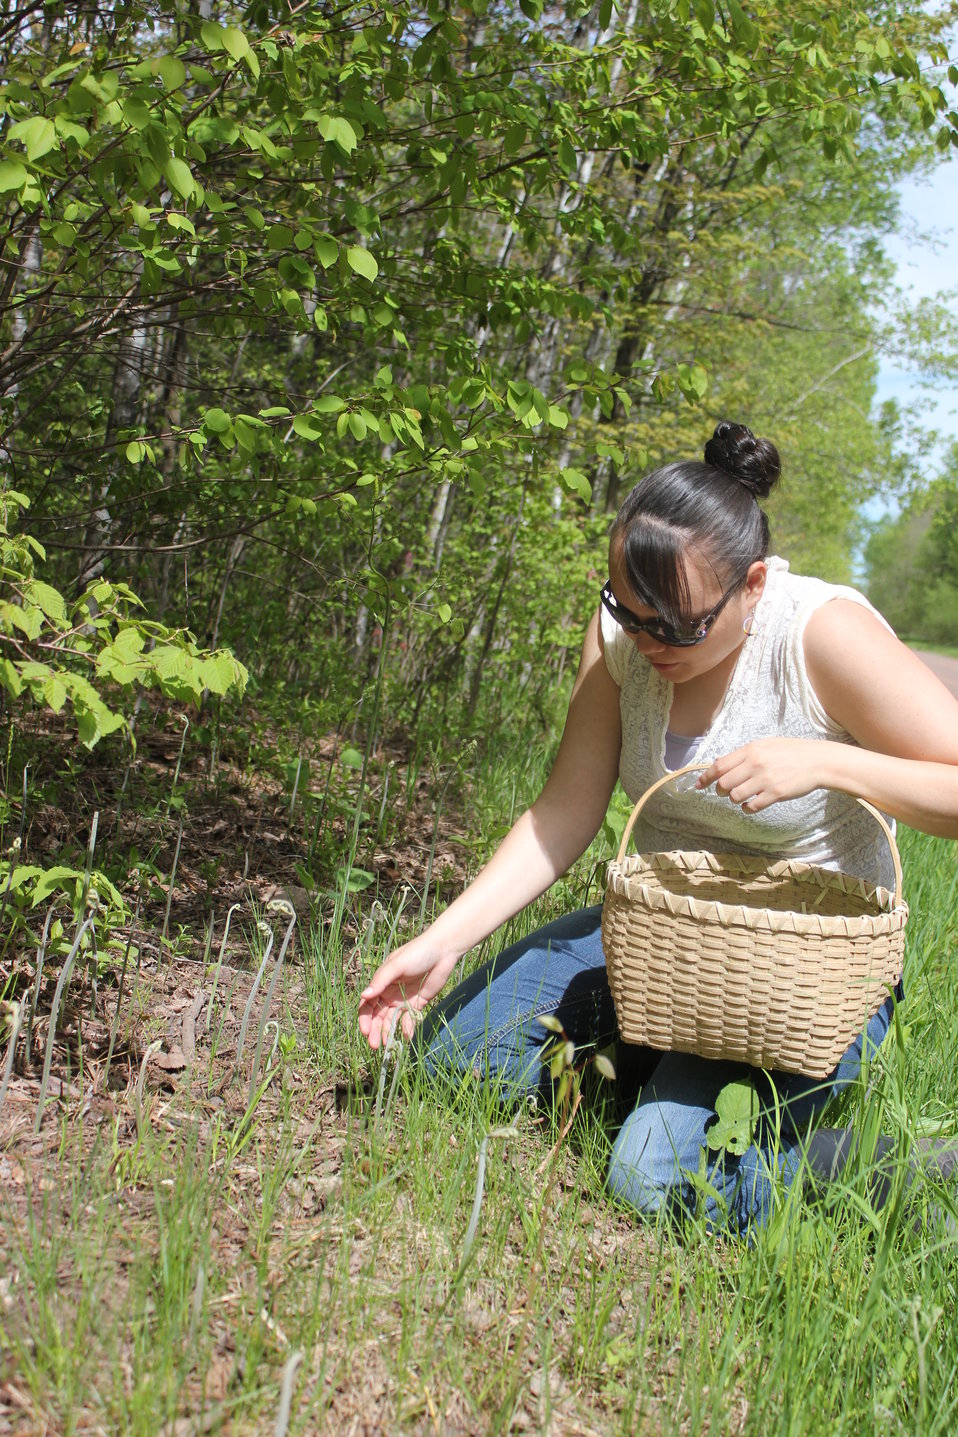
Native food Bracken Fern Fiddleheads1

Mino Wiisinidaa! project coordinator LaTisha Coffin harvests fiddlehead ferns that will be used in a cooking demonstration.